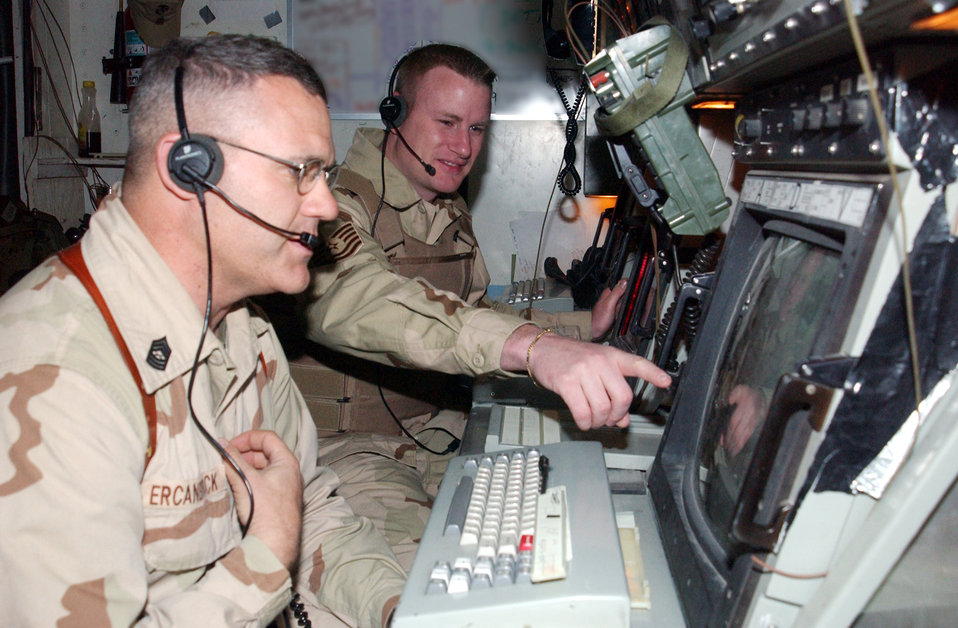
Airman among Marines

OPERATION IRAQI FREEDOM -- Tech. Sgt. Mark Morrison (background) consults with Marine Corps Master Sgt. Keith Ercanbrack at a control console. Morrison is the only Air Force air traffic controller in the all-Marine crew that monitors aircraft returning to forward-deployed location. He is with the 332nd Expeditionary Operations Support Squadron and deployed from the 46th Operations Support Squadron at Eglin Air Force Base, Fla.